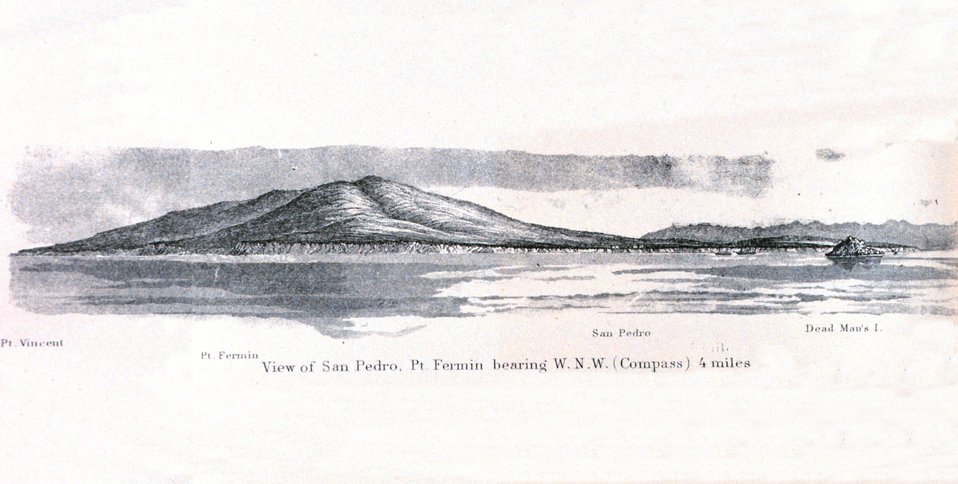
A view of San Pedro to the right and the highlands of Palos Verdes on the left. The Coast Survey Schooner EWING and Steamer ACTIVE are to the left of Dead Man's Island in this image, directly in front of what is now the major port area for Los Angeles. In: Pacific Coast. Coast Pilot of California, Oregon, and Washington Territory. By George Davidson, 1869. P. 15. Call No. VK947.D4 1869.